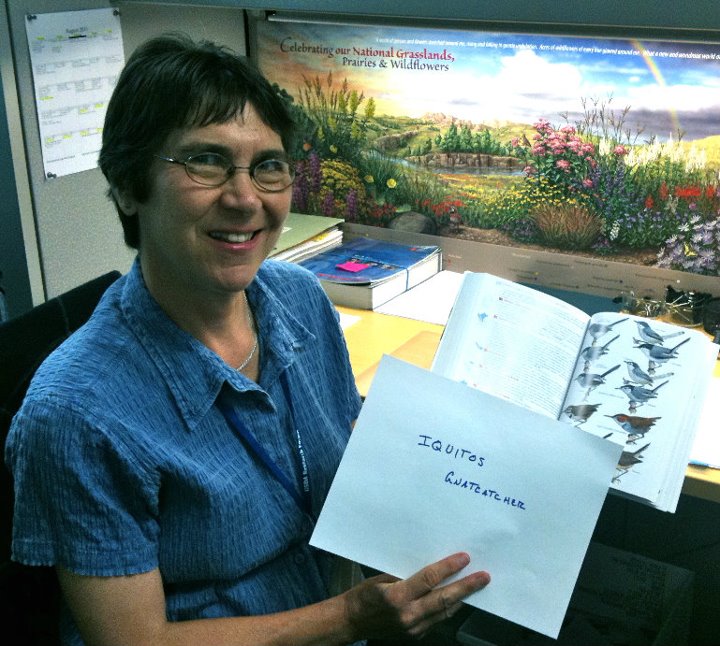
Sandy Farkas, 'Iquitos Gnatcatcher,'

International Affairs participates in FFI's In Our Hands campaign